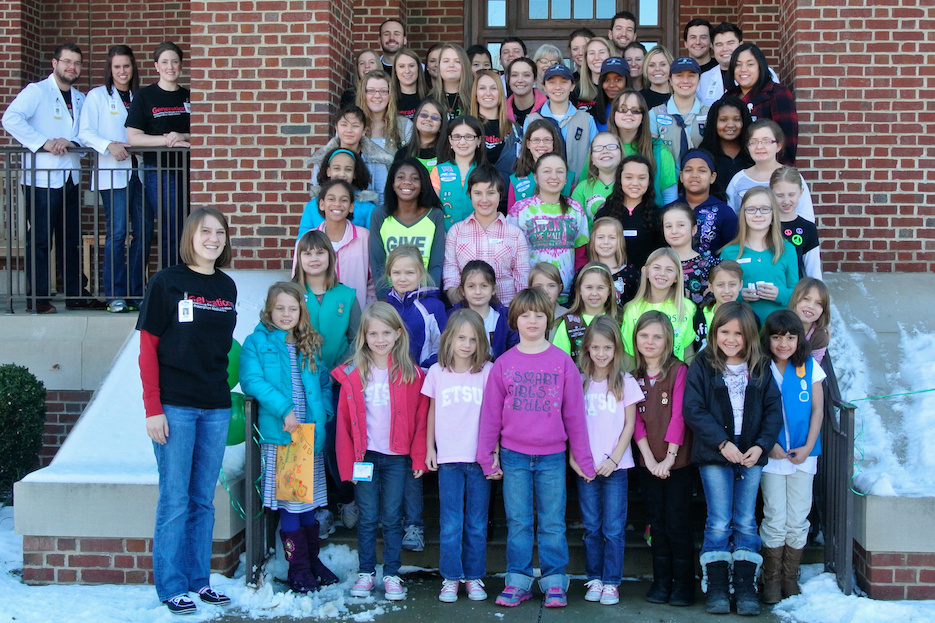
Girl Scots and the Generation Rx team at Bill Gatton College of Pharmacy at East Tennessee State University for NIDA National Drug Facts Week!